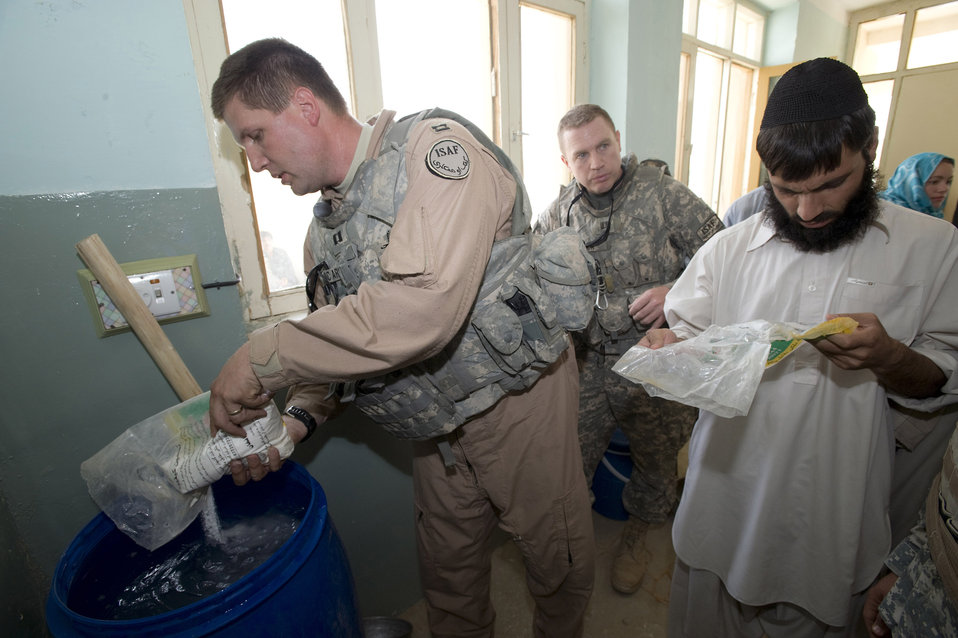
Zabul team combats malnutrition, unsafe water

Capt. (Dr.) James J. Arnold shows the staff at the district hospital in Shajoy, Afghanistan, how to operate a simple water purification system Aug. 10. The system uses saltwater to extract chlorine which can be then used to kill bacteria and parasites in drinking water. Dr. Arnold is a family medicine doctor and is deployed to the Zabul Provincial Reconstruction Team. One of the goals of this team is to reduce the extremely high infant mortality rate in the region, and one of the top causes is contaminated drinking water.